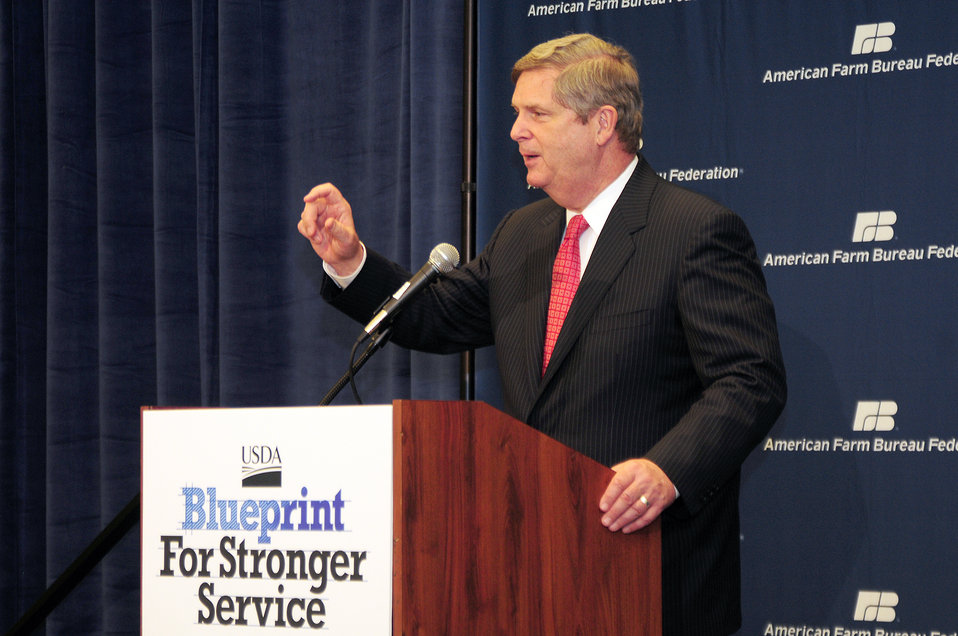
Agriculture Secretary Tom Vilsack presents USDA's Blueprint for Stronger Service, a plan to Increase Efficiency in USDA Operations, on Monday, January 9, 2012 in Honolulu, Hawaii.